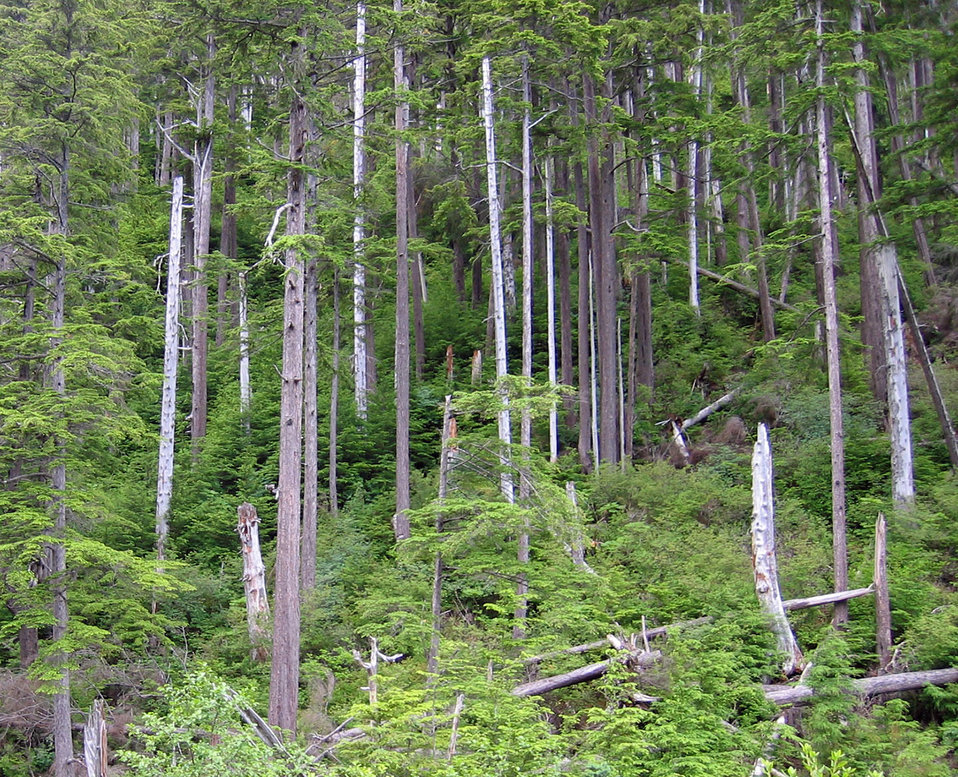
Alaska winter forest wind damage a

High winds this winter snapped off and blew down a small area in this western hemlock forest on the Tongass National Forest near Sitka, Alaska.